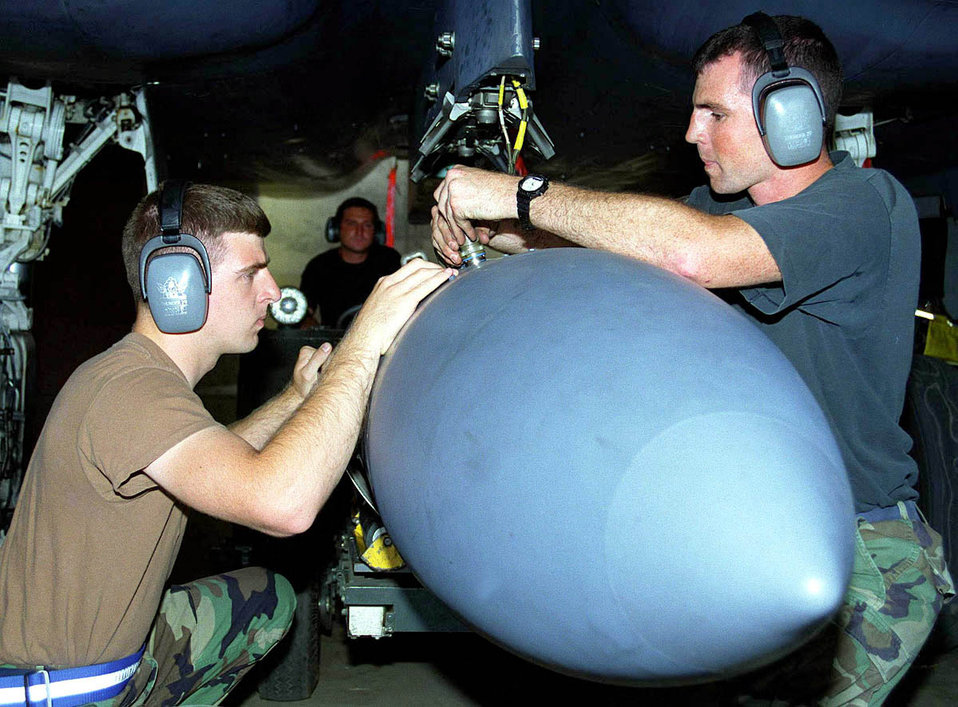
Teamwork

OPERATION NORTHERN WATCH -- Airman 1st Class Jason Webb (left), Senior Airman Anthony Wolfe (background) and Senior Airman Eric Canup (right) team up to load a data link pod on an F-15E Strike Eagle. They are from the 336th Fighter Squadron at Seymour Johnson Air Force Base, N.C., deployed to Incirlik Air Base, Turkey, to support Operation Northern Watch.